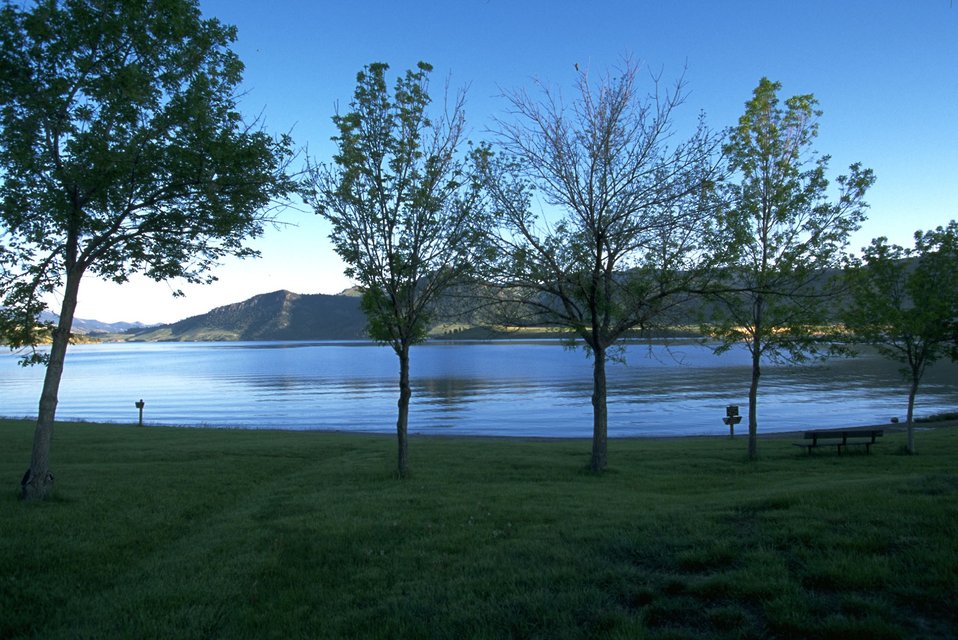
Holter Lake at sunset